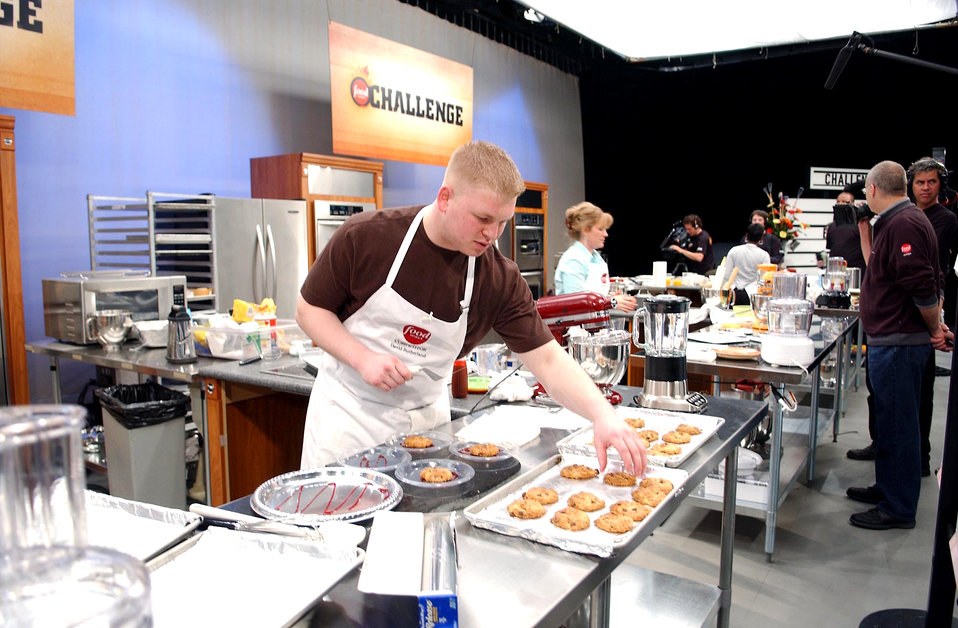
Missile Chef competes on TV

Senior Airman David Sutherland places his cowboy cookies onto plates drizzled with boysenberry sauce to compete against four others during the 2006 Food Network Cookie Challenge Monday, March 20 in Denver. Airman Sutherland is a missile chef with the 741st Missile Squadron, Minot Air Force Base, N.D.